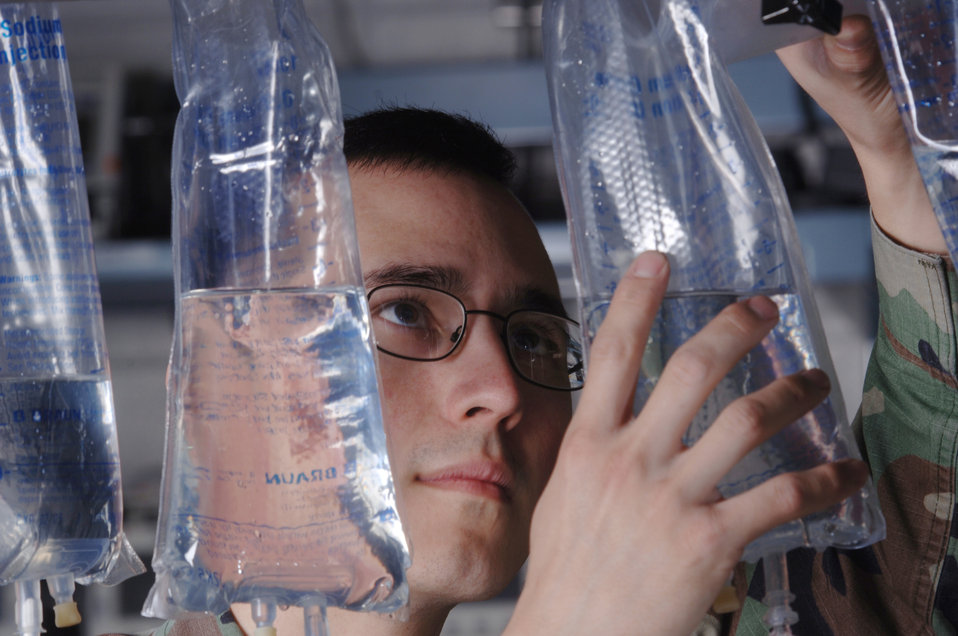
Fluid intake

YOKOTA AIR BASE, Japan -- Airman 1st Class Thomas Elliott fills intravaneous bags with water while conducting a calibration and verification test on an infusion pump. The test ensures the equipment properly administers fluid to patients here. He is a biomedical equipment technician with the 374th Medical Support Squadron's medical equipment repair center.